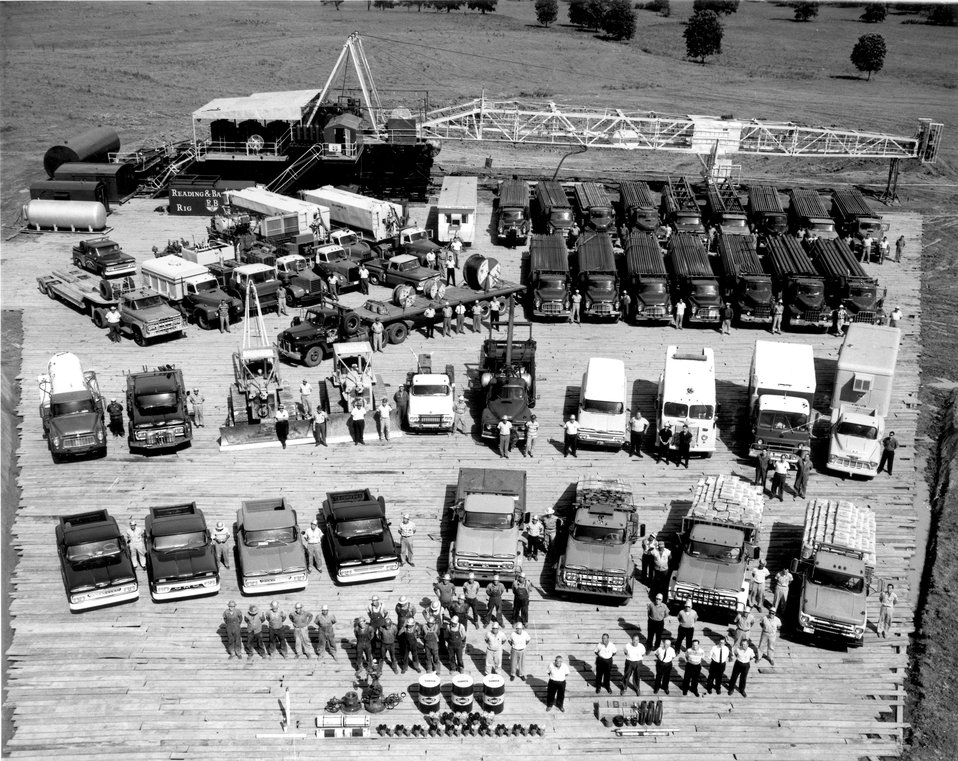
Gathered together on one spot are 95 men and almost $2 1/4 million worth of materials and equipment needed to drill and complete one typical oil well. The drilling location shown here, in South Mississippi, is the McComb Field Unit 26-1. c. undated